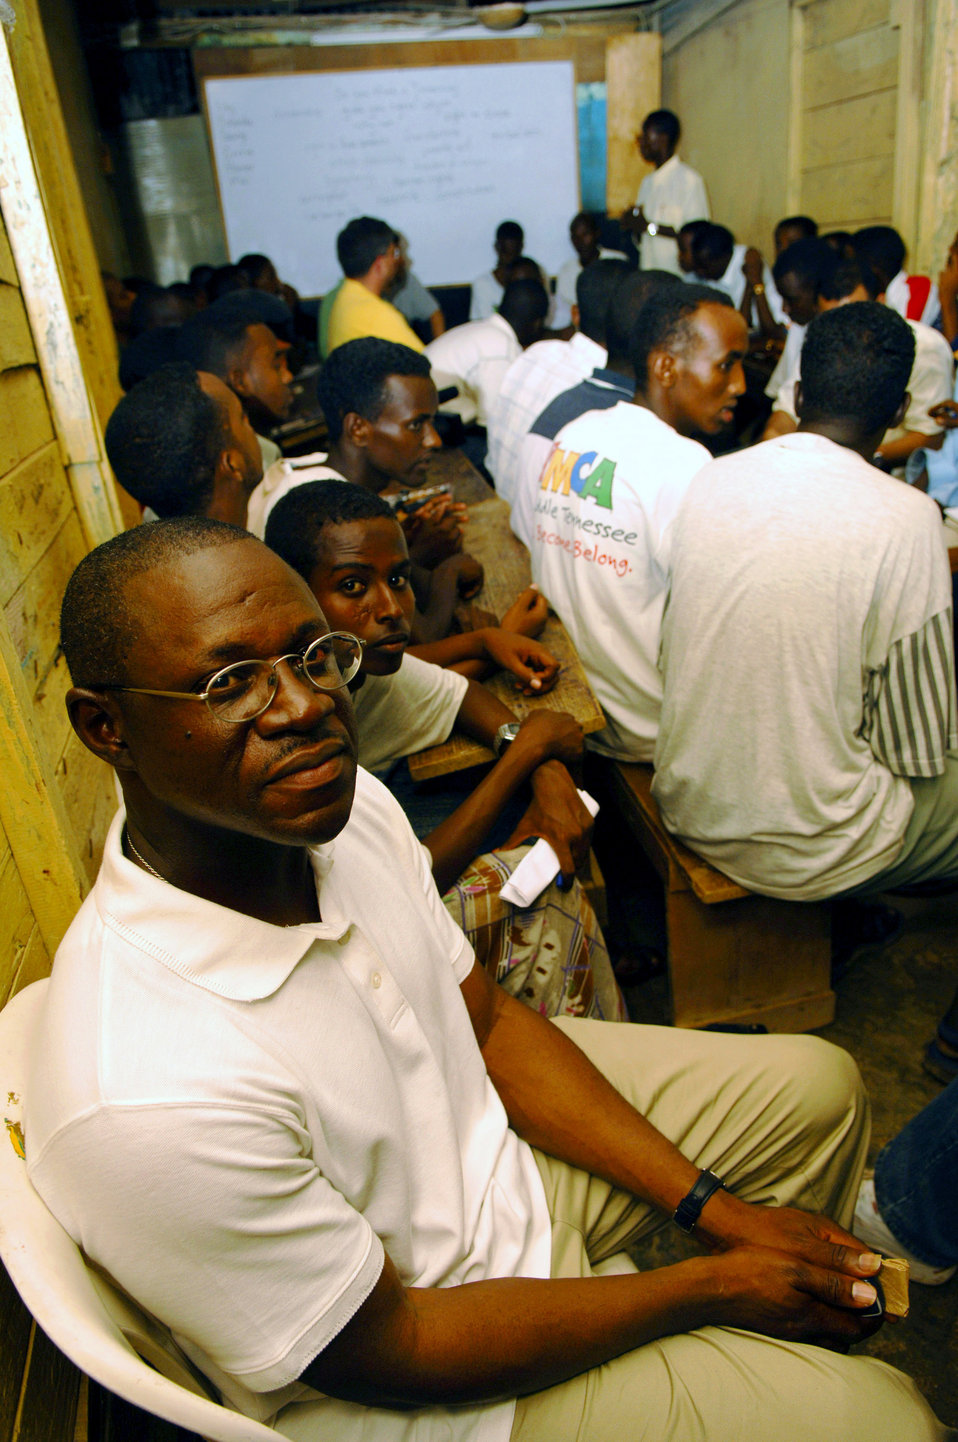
Airmen help Djiboutians learn English

Senior Master Sgt. Sylvester Shaw sits in a classroom where Americans help teach English to Djiboutians April 5 in Djibouti City, Djibouti. Servicemembers from Camp Lemonier volunteer their time to help Djiboutians learn and practice their English. Classes are held six nights a week in various schools throughout Djibouti City. Sergeant Shaw is the English discussion group coordinator for Camp Lemonier, Djibouti.